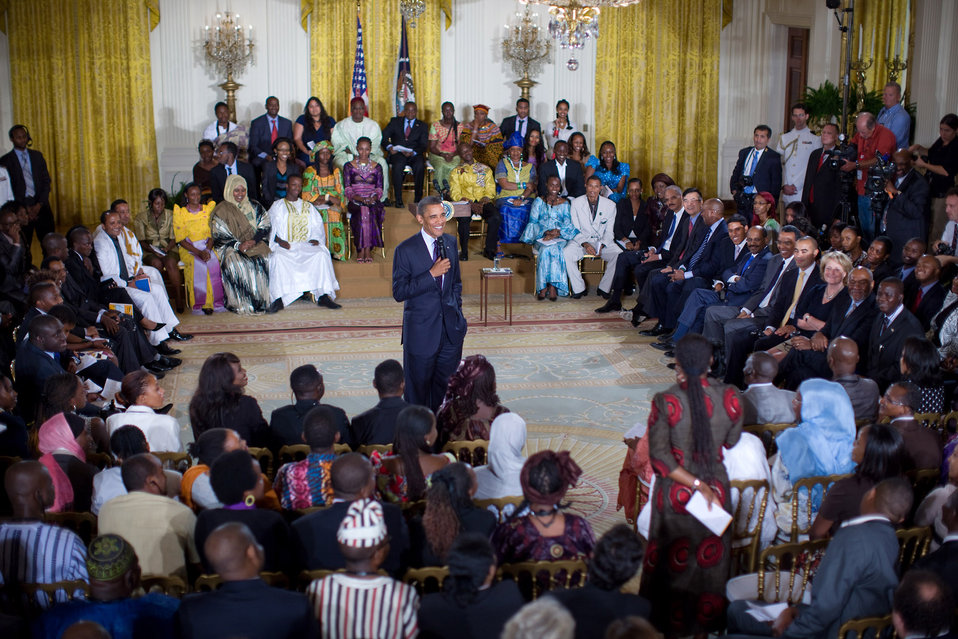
President Obama Listens to a Question from Shamima Muslim of Ghana

President Barack Obama listens to a question from Shamima Muslim of Ghana during a town hall-style meeting with young African leaders in the East Room of the White House in Washington, D.C., on August 3, 2010.